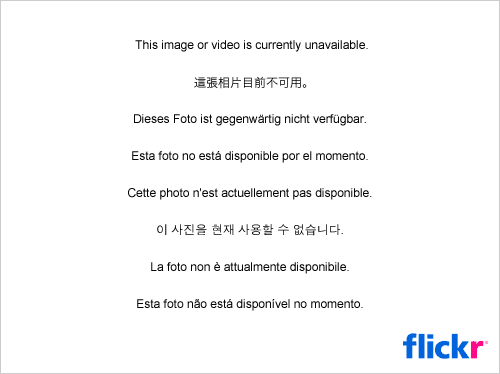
NEW CANCER TREATMENT AGENT... At Brookhaven National Laboratory, the man-made radioisotope californium-252 is being evaluated as a possible treatment agent for cancer. Photo shows the procedure for applying a small (l micron) californium-252 source to the skin of an anesthetized pig at Brookhaven to determine skin tolerance to neutrons emitted from the californium.